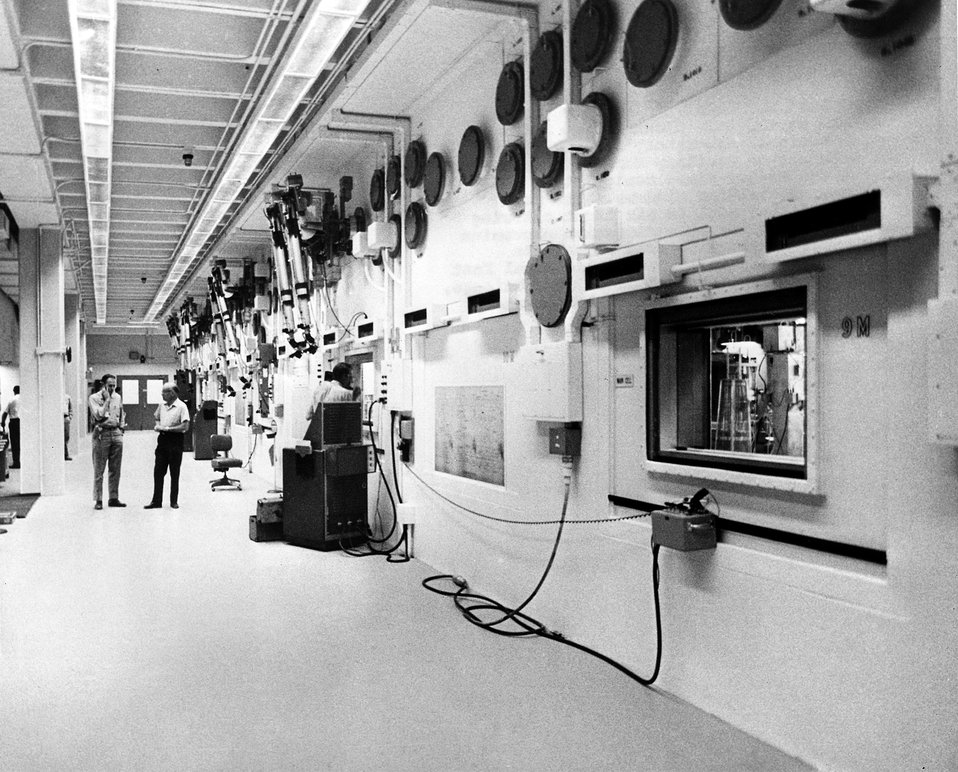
One of the working corridors on the main floor of the AEC's Argonne Lab.
c.1973